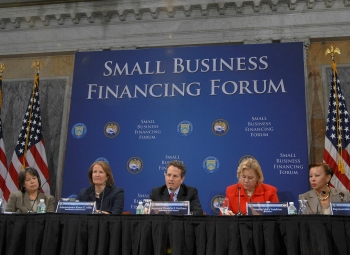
Treasury and SBA Host a Small Business Financing Forum

Secretary Geithner addresses a forum on small business financing issues for a range of key stakeholders including policymakers, lenders, and small business owners to explore new ideas and strategies for expanding access to financing for small businesses.